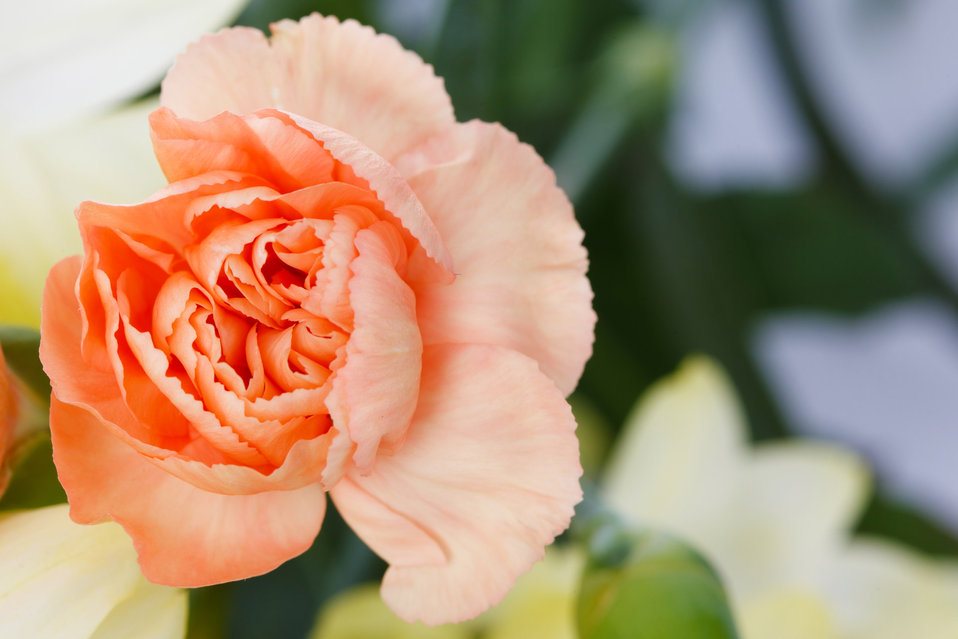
Carnation flower

Macro photo of an orange carnation.